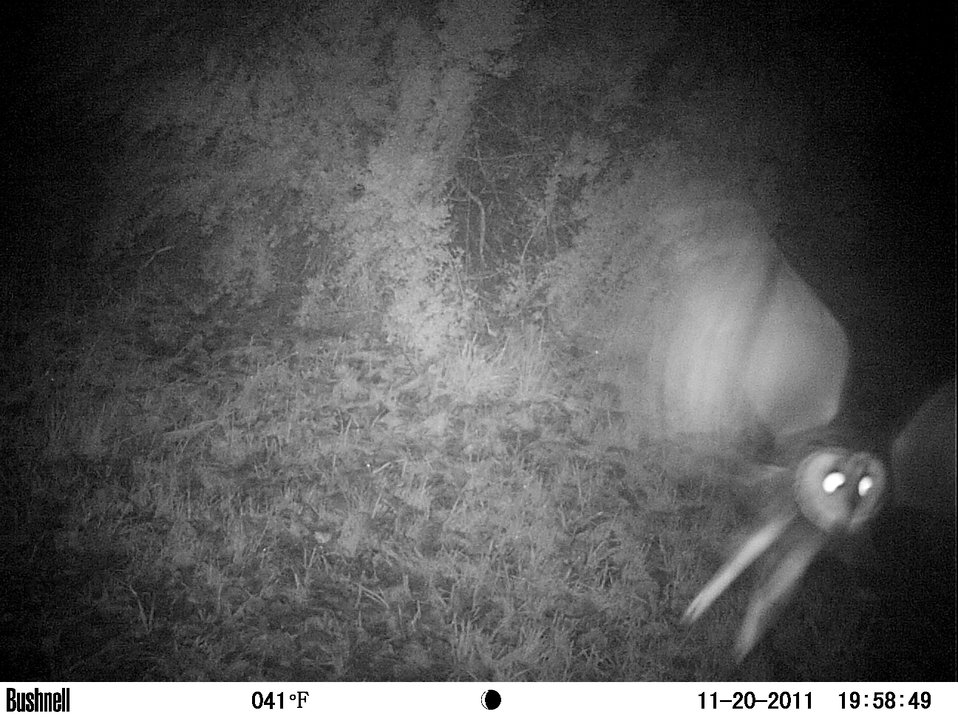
Whoo goes there?

owl in flight
trail camera photo
Sacramento River National Wildlife Refuge, CA